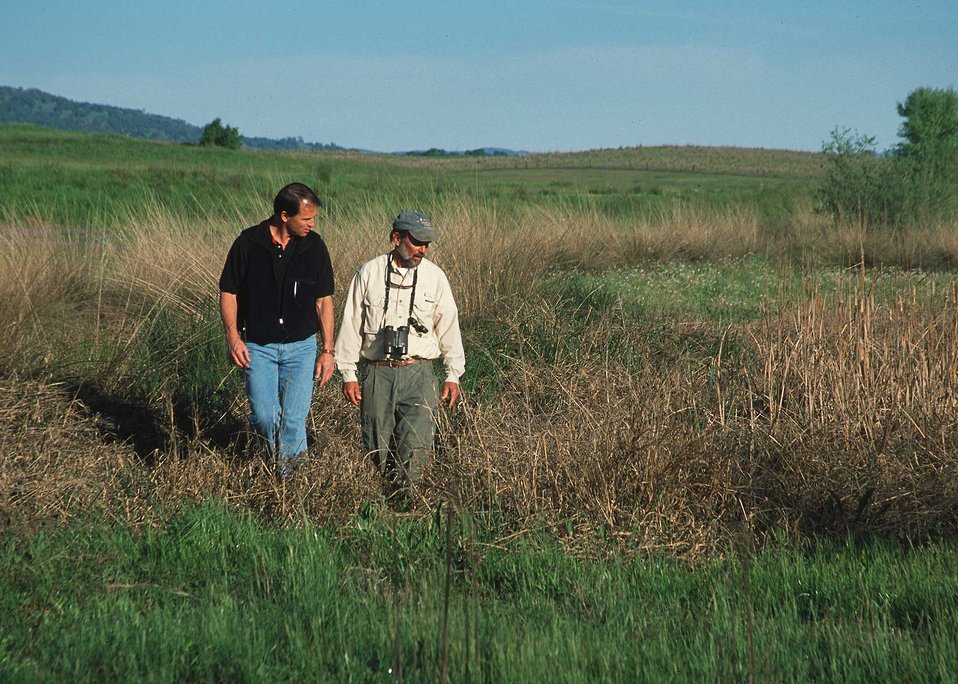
NRCS conservationist discusses wildlife habitat area with Yolo County farmer.